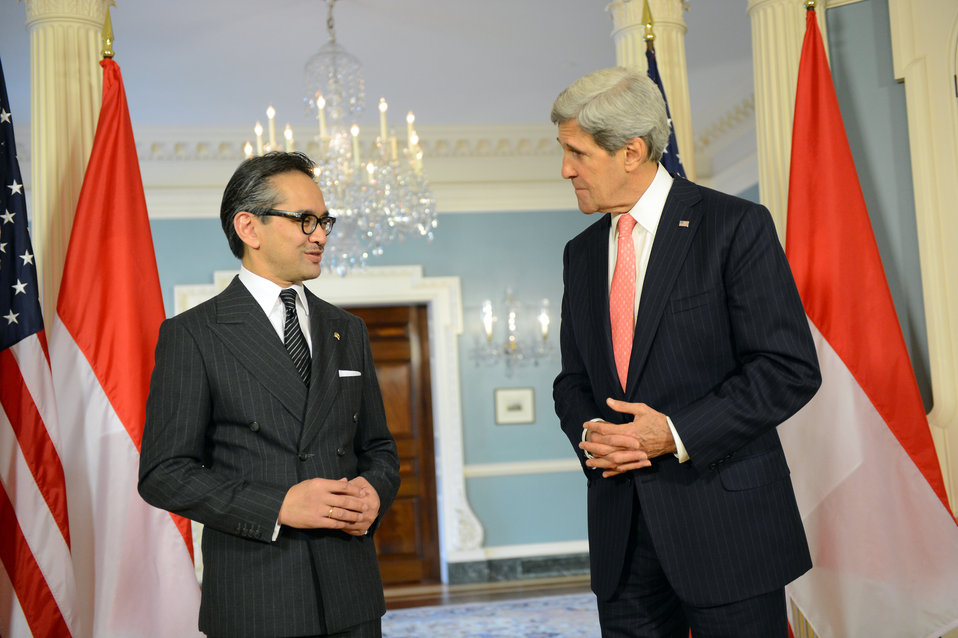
Secretary Kerry and Indonesian Foreign Minister Natalegawa Address Reporters

U.S. Secretary of State John Kerry and Indonesian Foreign Minister R.M. Marty Natalegawa address reporters before their bilateral meeting at the U.S. Department of State in Washington, D.C., on May 16, 2013.